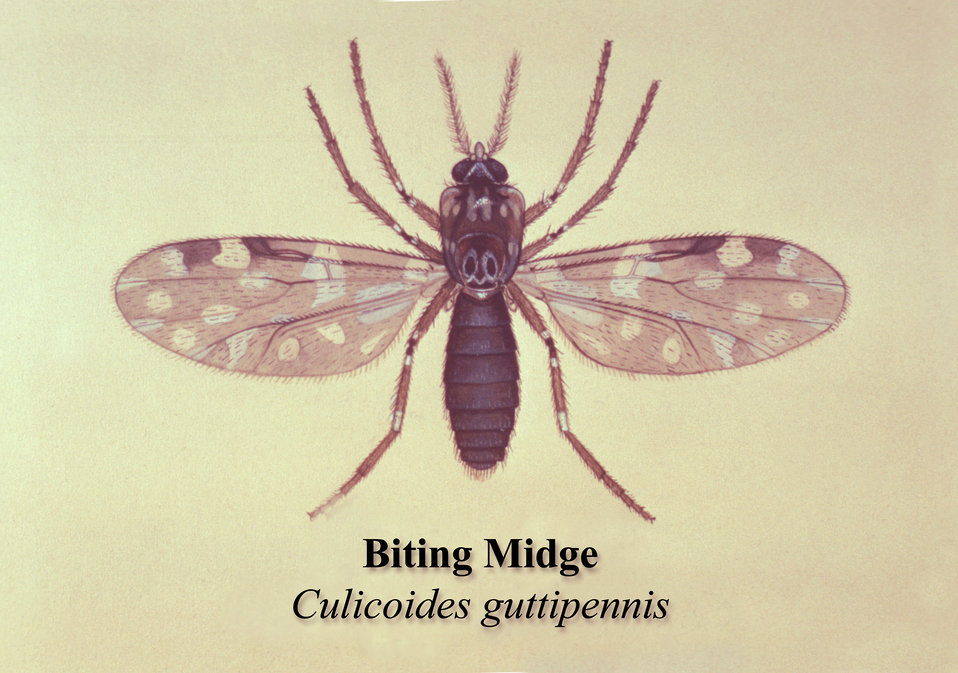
This is an illustration of a sand fly, or the 'biting midge', Culicoides guttipennis.